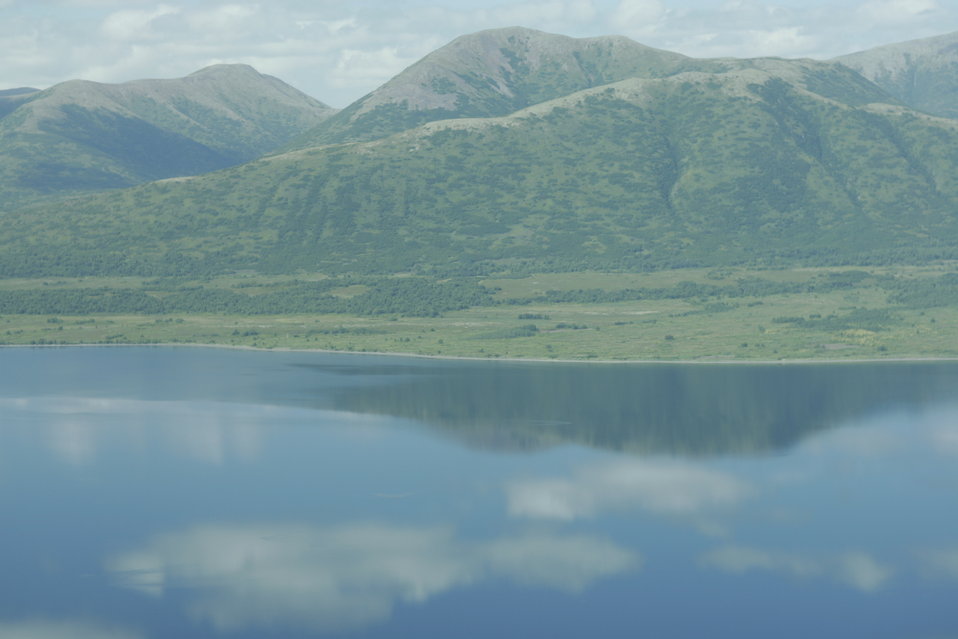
Togiak Nation Wildlife Refuge